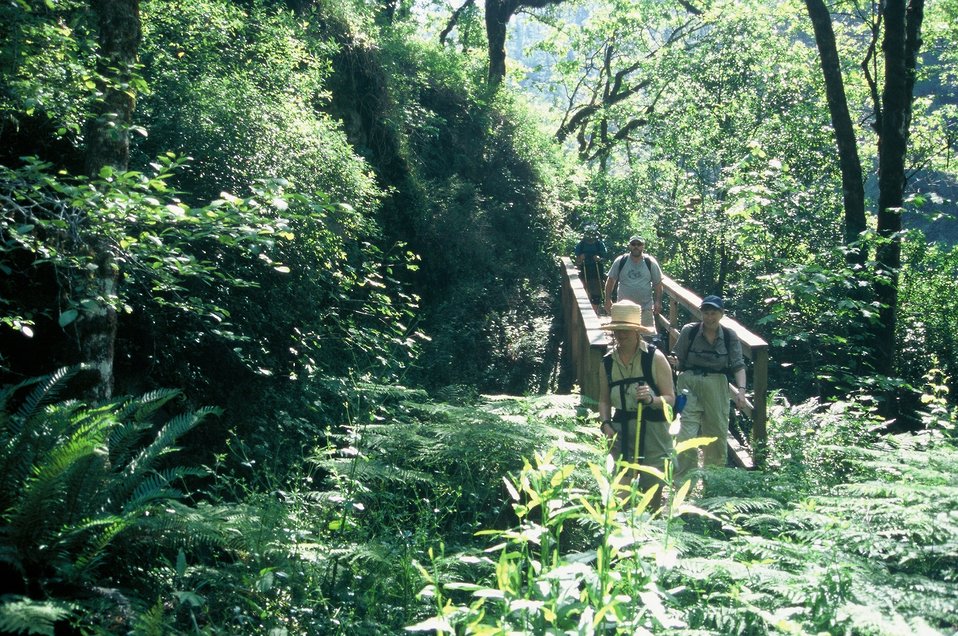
Wild section of the Rogue River from Grave Creek to Foster Bar May 19 to May 22.